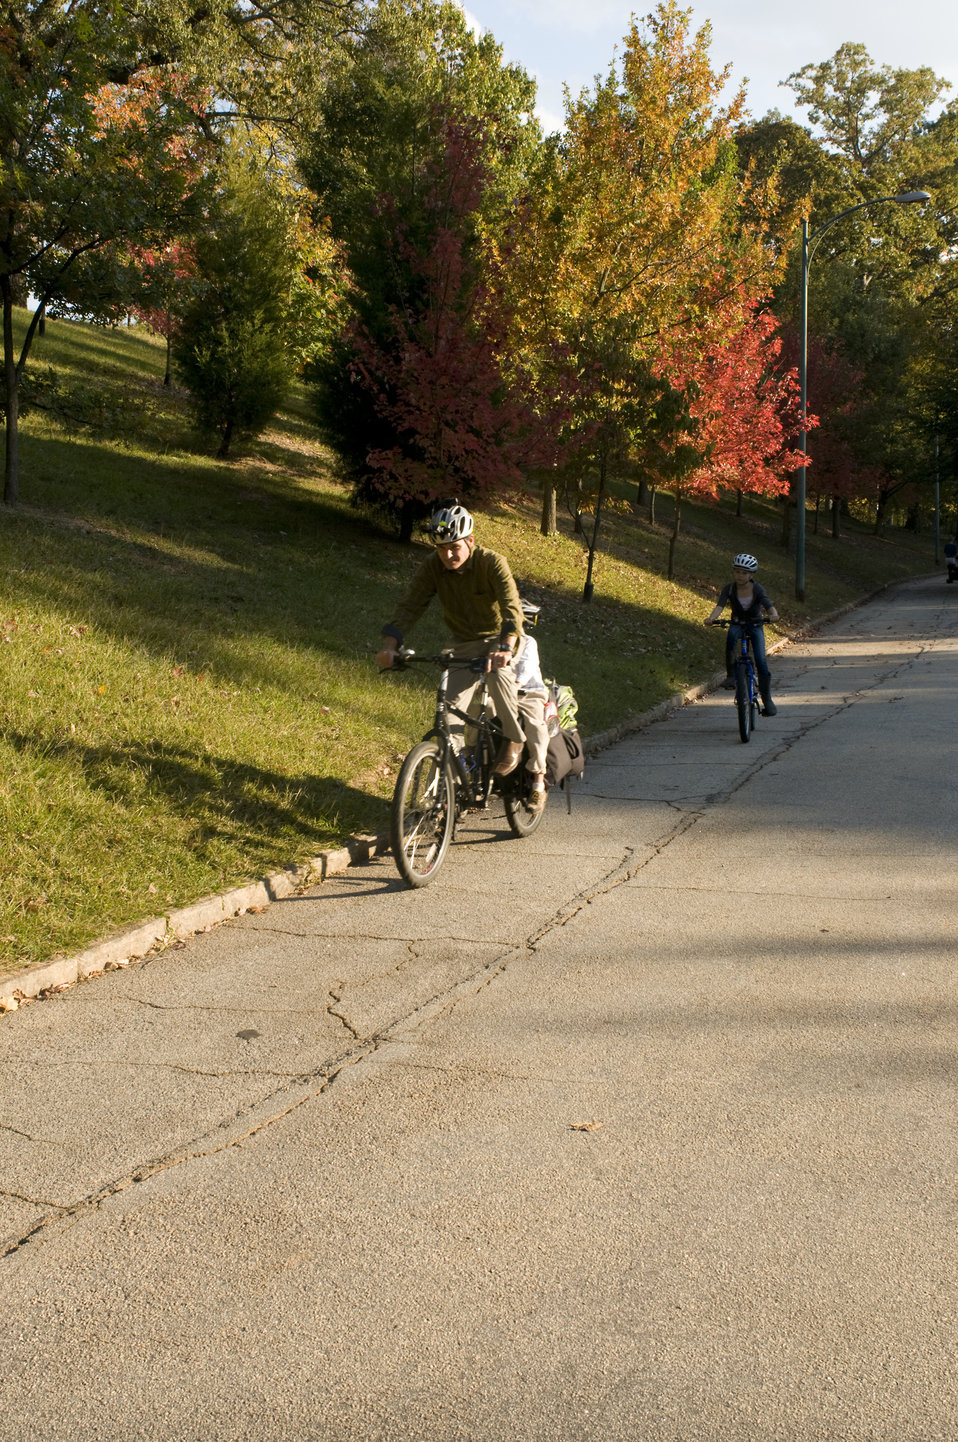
Protective measures having been taken by a careful father, this dad and his two young children were on their way, as they embarked on a Georgian bicycle trip. Riding behind her father, the daughter was riding her own bike, while the son, seated in a small child-safe bicycle seat, was riding on the same bike as his dad. All three were wearing aerodynamic safety helmets, and clothing to protect them from the sun, wind and insects. The only thing missing, was a piece of outerwear, which was very bright in color, allow for a greater degree of rider visibility.